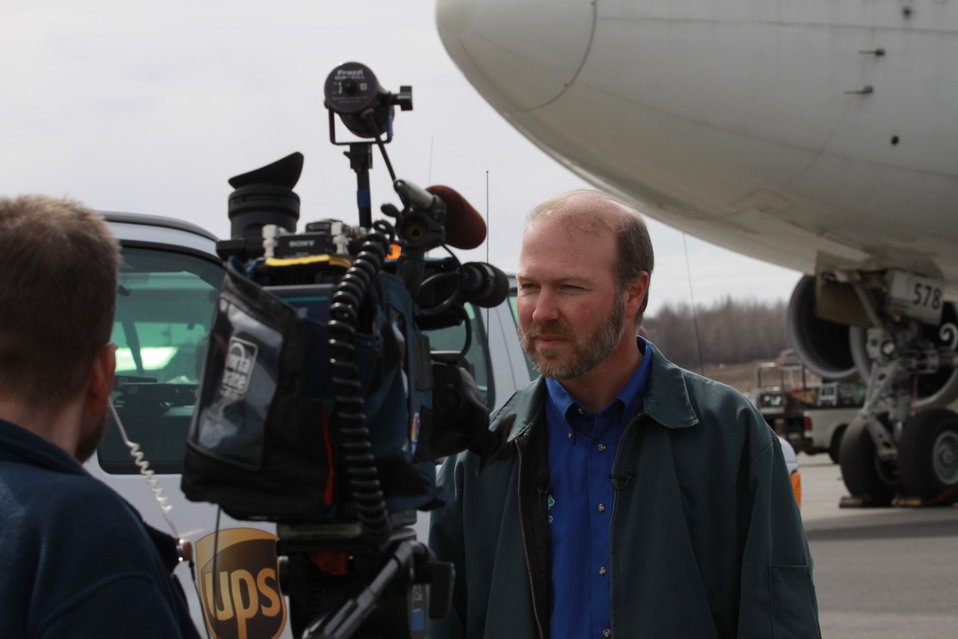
volle